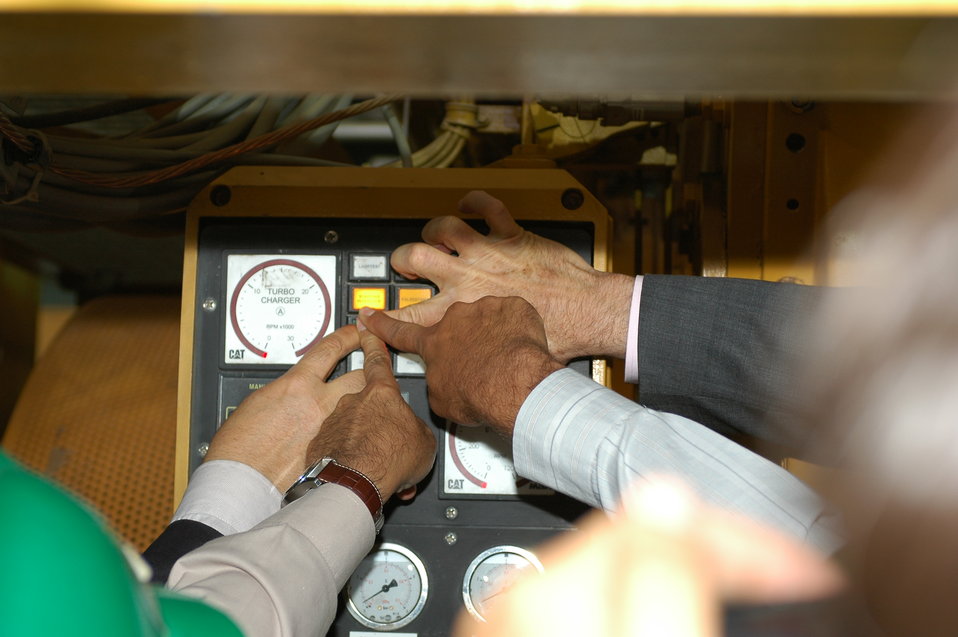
105 MW Tarakhil Power Plant Handover

Ambassador Eikenberry and Tarakhil workers push the button to start the turbine.